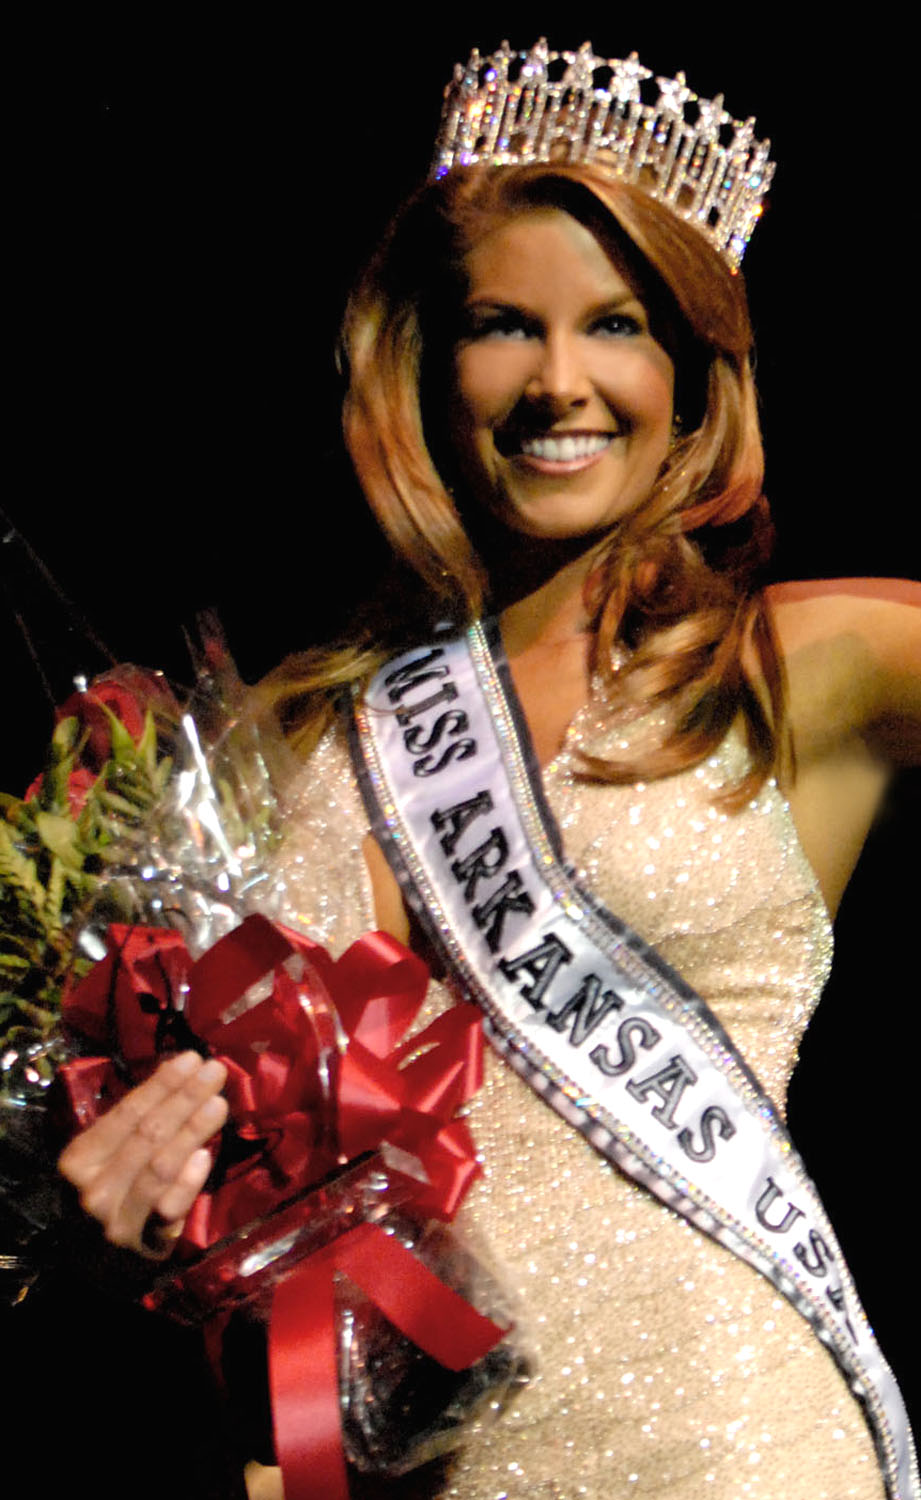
Airman selected as Miss Arkansas USA

Second Lieutenant Kelly George was selected as Miss Arkansas USA during the state pageant Oct. 28 held on the campus of the University of Central Arkansas. Lieutenant George is a resident of Sherwood, Ark., and is the deputy chief of Public Affairs for the 314th Airlift Wing at Little Rock Air Force Base, Ark.